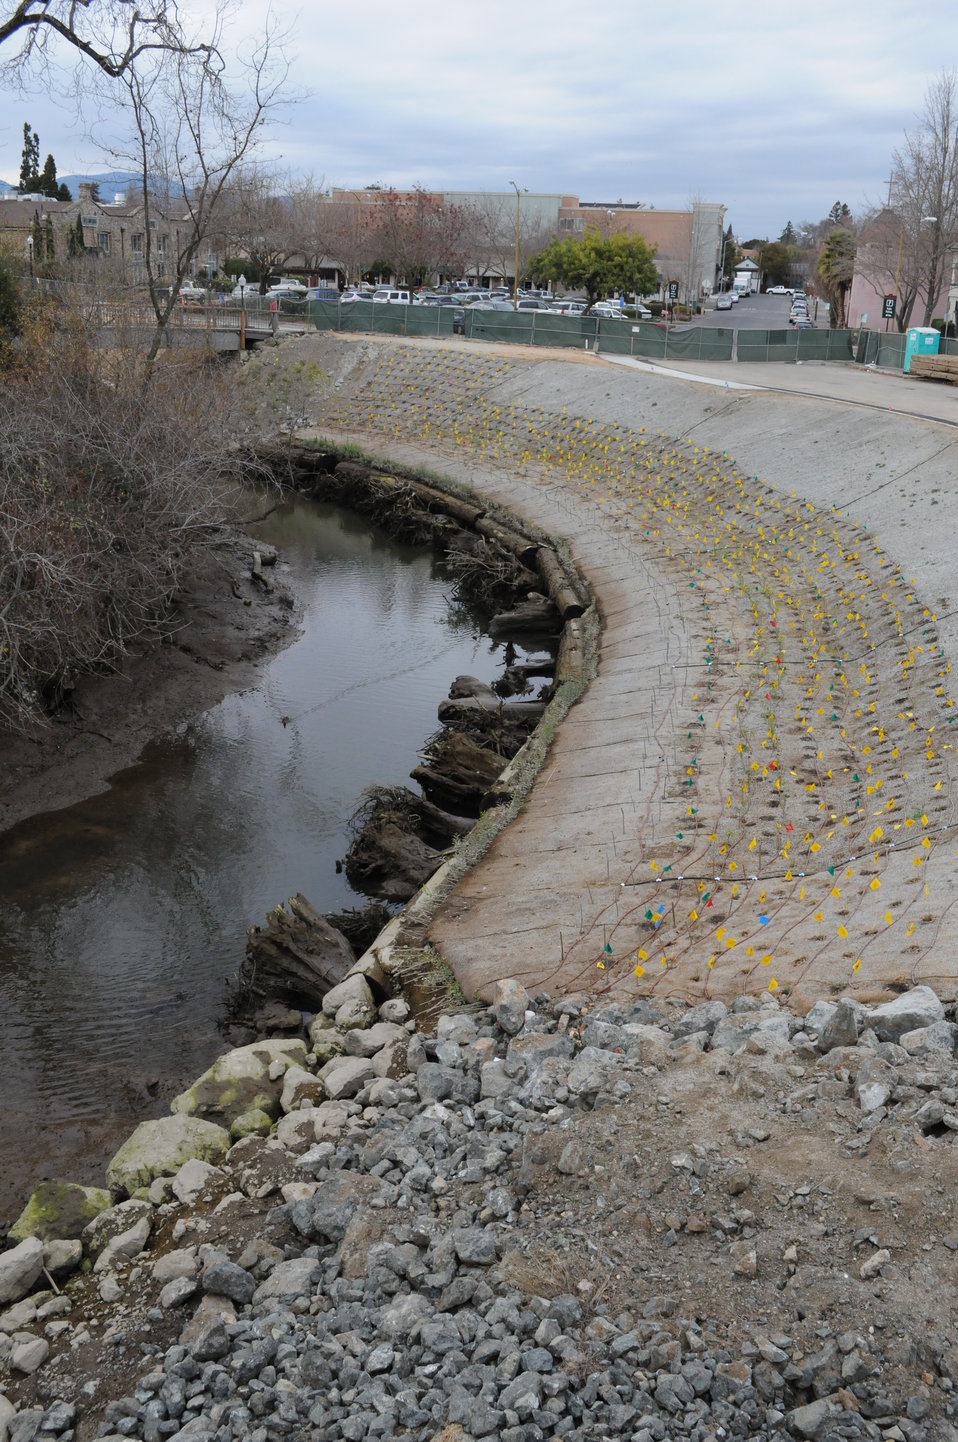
Napa Creek habitat restoration

New native species plantings, shown Jan. 18, 2012, line the banks of Napa Creek in Napa, Calif. The plantings, along with tree trunks placed along the bank, will provide habitat for fish and other river species. The environmental restoration work is part of the $14.8 million Napa Creek Project, funded by the American Recovery and Reinvestment Act of 2009; a joint effort of the U.S. Army Corps of Engineers Sacramento District, the city of Napa, and the Napa Flood Control and Water Conservation District to reduce flood risk for the city. The Corps also widened the creek and is installing box culverts – tunnels large enough for a car to drive through – to channel flood water from the creek more quickly to the Napa River and way from homes and businesses.